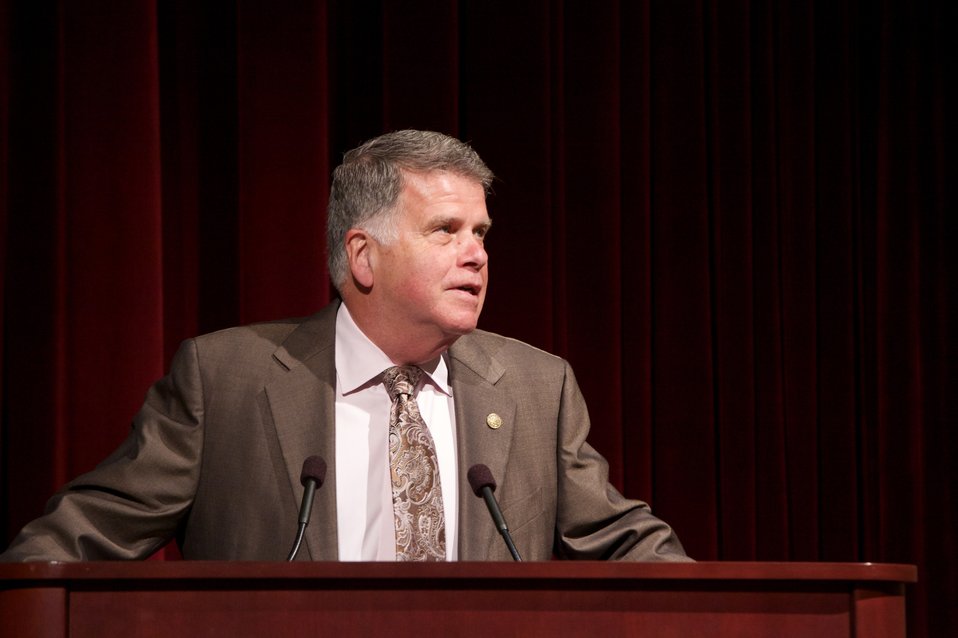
Revolutionary Summer; David Ferriero, Archivist of the United States, introduces author Joseph Ellis